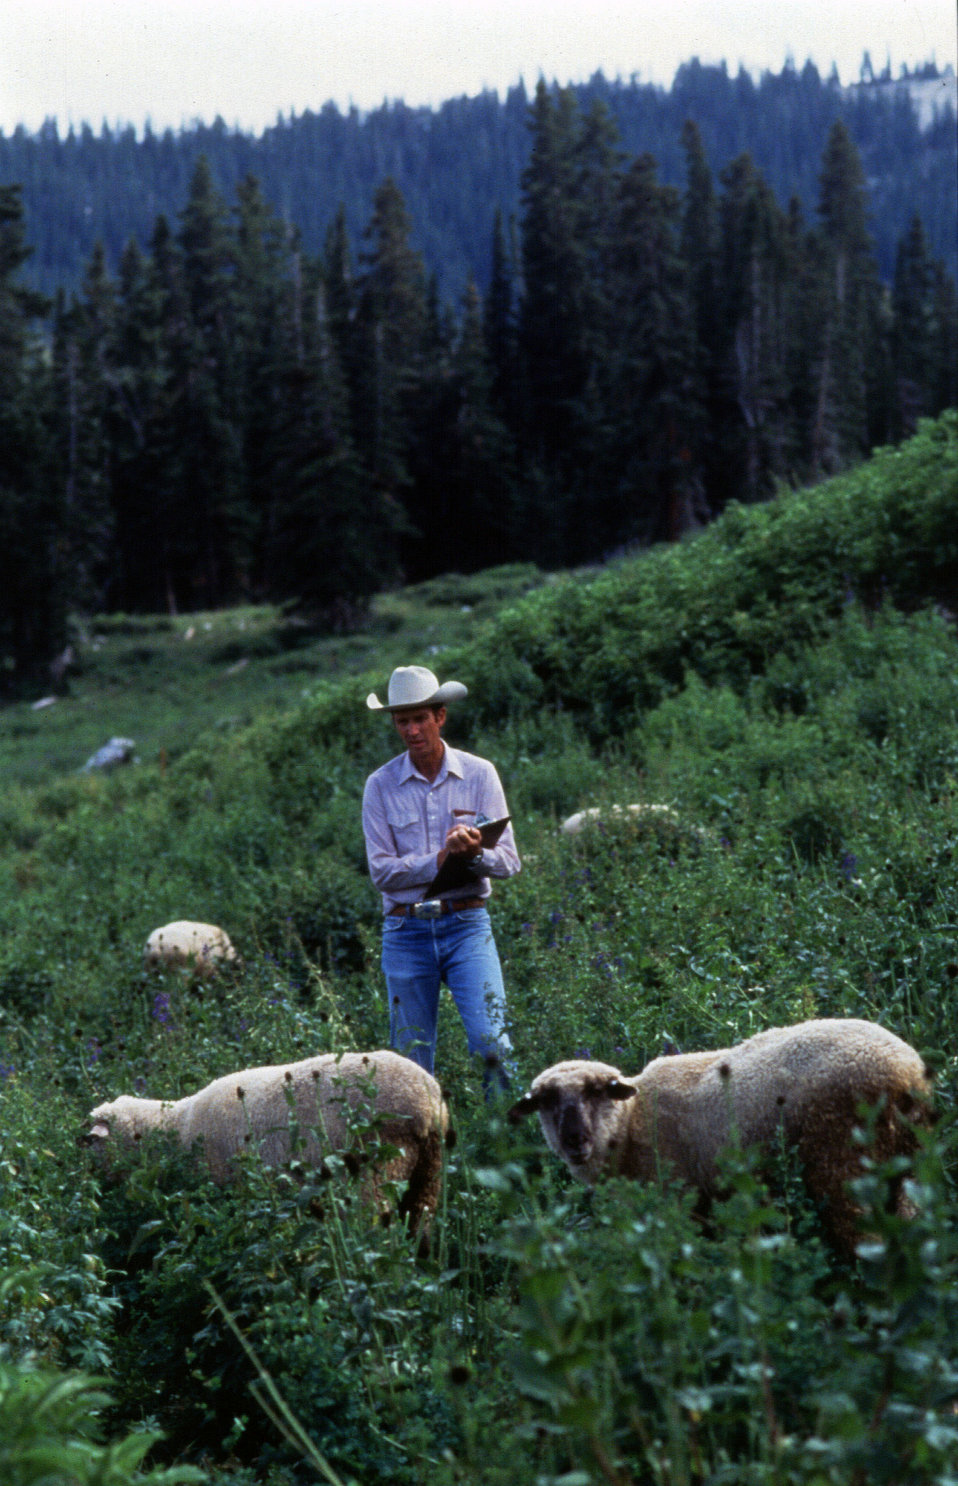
U.S. Department of Agriculture (USDA) Agricultural Research Service (ARS) range scientist Michael Ralphs records sheep's plant preferences as part of a study to improve cattle grazing pastures. Since sheep are less affected by larkspur, they may be used to reduce the amount of it in mountain pastures before cattle are allowed to graze.